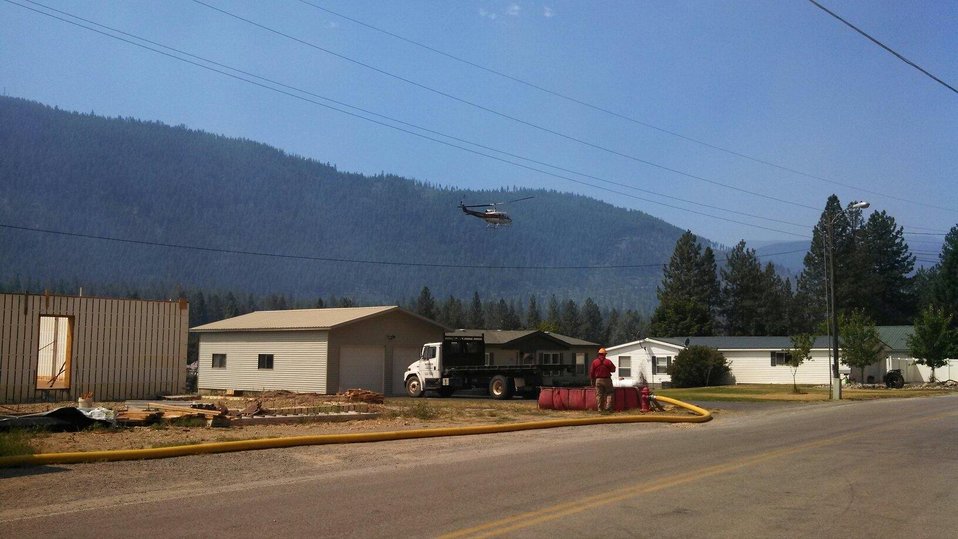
Volunteer Fire Departments assist with structure protection against the West Mullan Fire in the Lolo National Forest, MT. The West Mullan Fire in the Lolo National Forest in Montana near Superior, MT began on Jul. 14, 2013 was due to human interference and has consumed approximately 6, 090 acres. The West Mullan Fire is approximately 45% contained.